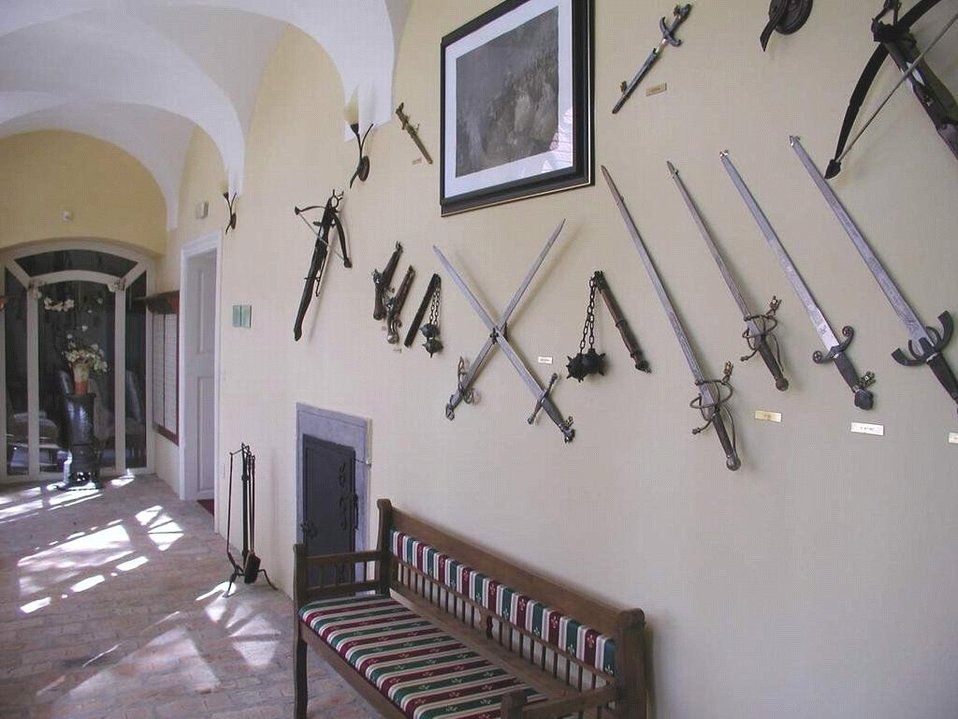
Expozícia historických zbraní Licencovanie: Autorom fotografie je Imrich Šimonek z Dubníka sk:Category:Dubník sk:Kategória:Presunúť na Commons